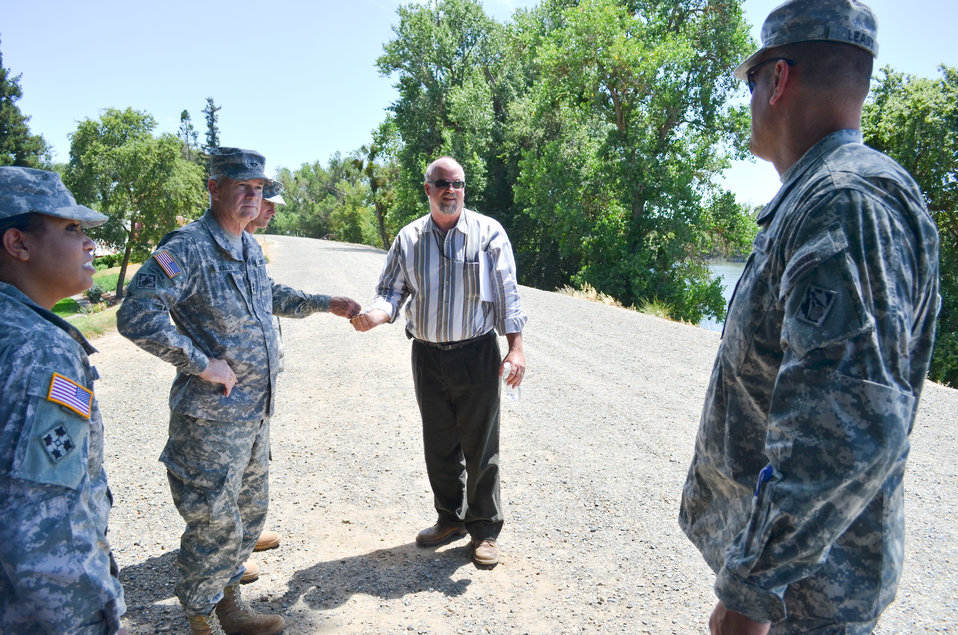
Maj. Gen. Walsh tours Sacramento River levee

U.S. Army Corps of Engineers project manager Dan Tibbitts (center) shares a handful of soil from a Sacramento River levee with Brig. Gen. Michael Wehr, commander of the Corps’ South Pacific Division, to explain how its sandy composition threatens levee stability during a tour with Maj. Gen. Michael J. Walsh (second from left), the Corps’ Deputy Commanding General for Civil and Emergency Operations, in Sacramento, Calif., July 19, 2012. Walsh oversees all of the Corps’ flood risk reduction projects in California, including Sacramento levee improvements and the construction of Folsom Dam’s new auxiliary spillway.